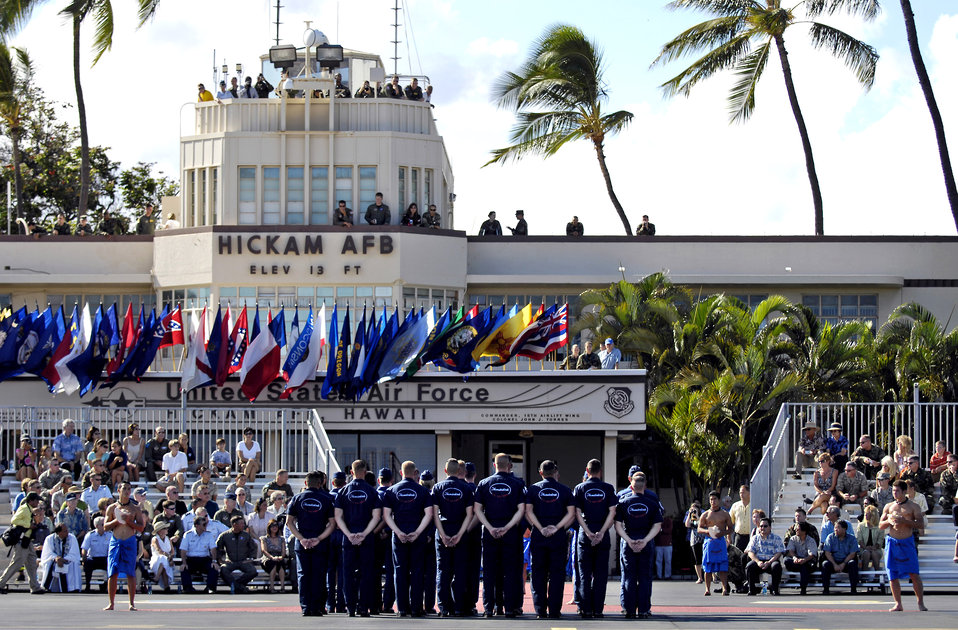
Thunderbirds arrive for Air Force Week Honolulu

The Air Force Air Demonstration Squadron, the Thunderbirds, is welcomed to Hickam Air Force Base, Hawaii, Sept. 12. The team is performing as part of Air Force Week Honolulu, which runs Sept. 8 through 15.